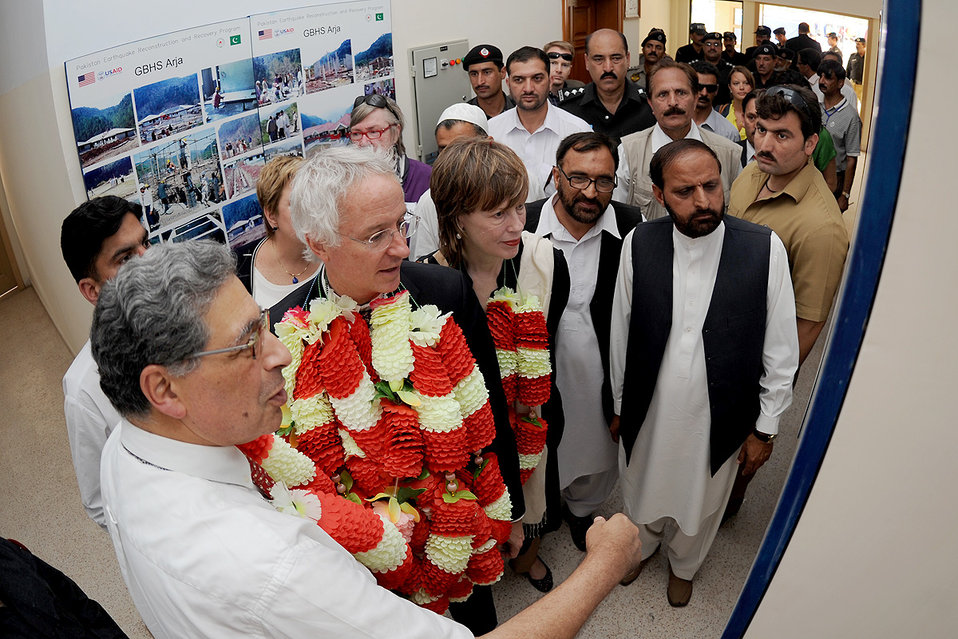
Envoy Highlights U.S. Development

Bagh, June, 13, 2012—U.S. Ambassador Cameron Munter reiterated U.S. government’s support for development of Pakistan while visiting two schools built in Arja community, Bagh District with U.S. funding. These two schools are among 51 education and health facilities that have been constructed in Bagh District of Azat Jammu and Kashmir and Mansehra District of Khyber Pakhtunkhwa by the United States Agency for International Development (USAID) to help the area recover from the devastating 2005 earthquake.